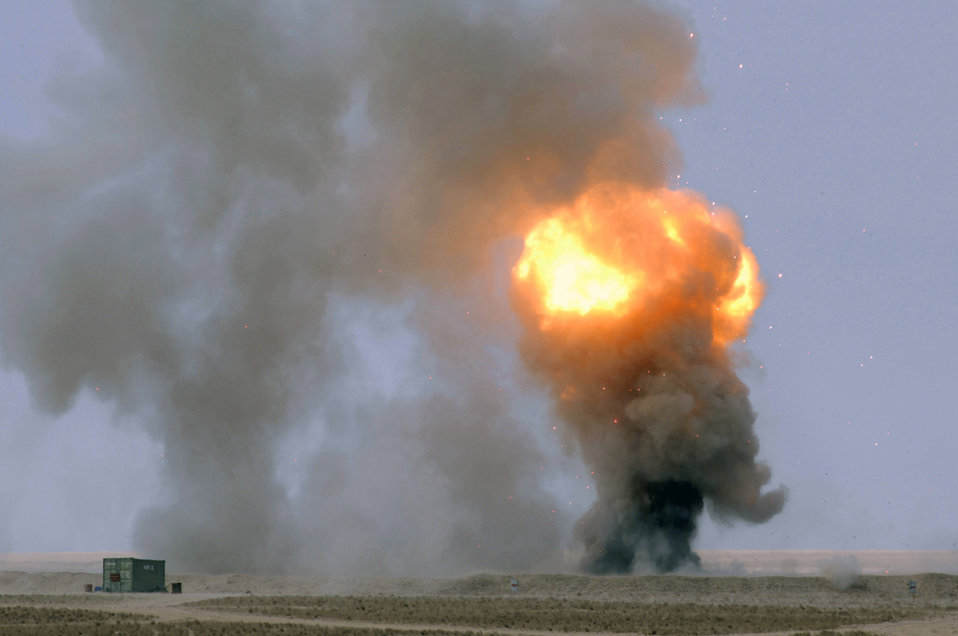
U.S. Air Force, Australian EOD have a blast

A fire ball rises into the sky during a controlled detonation performed by coalition forces from the Air Force's 386th Expeditionary Civil Engineer Squadron and the Australian Army Force Level Logistic Asset unit Jan. 18 at an explosive ordnance disposal range in Southwest Asia. The controlled detonation is used to destroy unserviceable munitions.